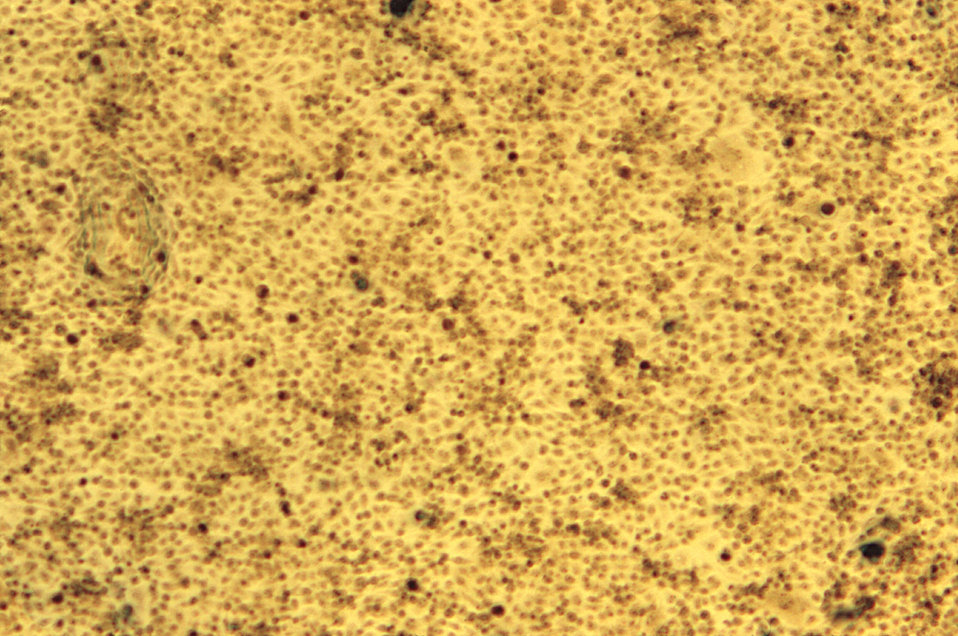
This photomicrograph reveals McCoy cell monolayers with Chlamydia trachomatis inclusion bodies; Magnified 50X.